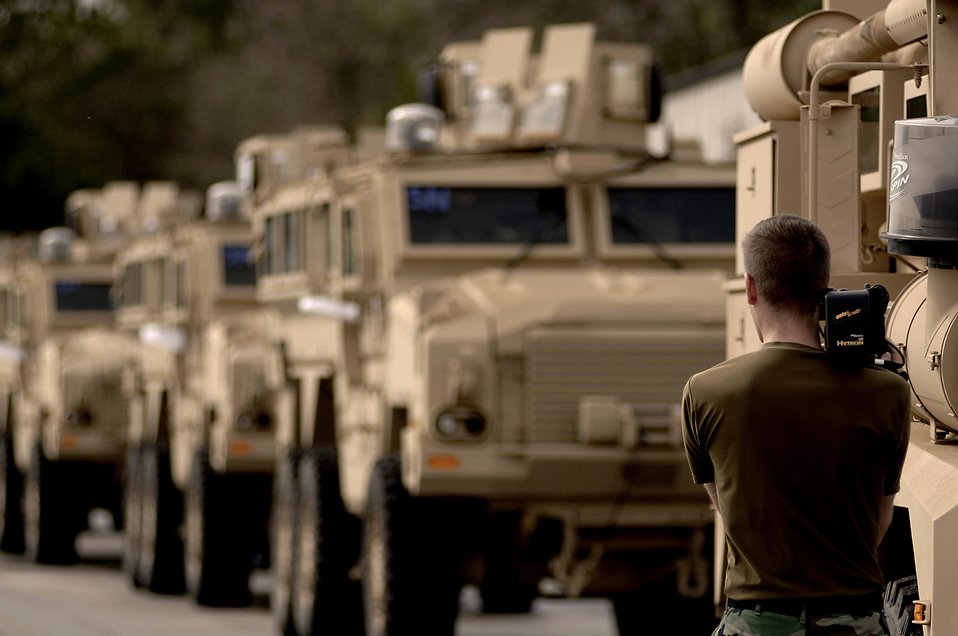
Charleston aircrews deliver 2,000th MRAP

Mine-resistant ambush-protected vehicles sit parked March 4 on the flightline at Charleston Air Force Base, S.C. Base members recently delivered the 2,000th MRAP to warfighters overseas.